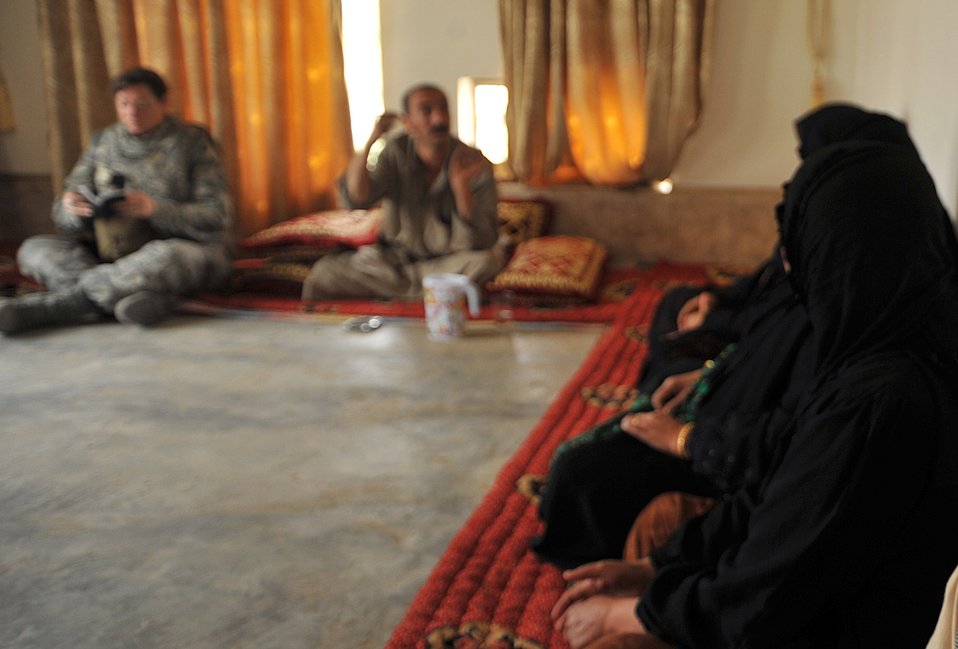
Balad team helps Iraqi women learn beekeeping trade

Hummed Malek (foreground) listens to Alahin Aziz Saleh as he teaches localshow to care for bees April 12, 2010, in Marzarie South, Iraq. Mr. Saleh is an Iraqi beekeeper.